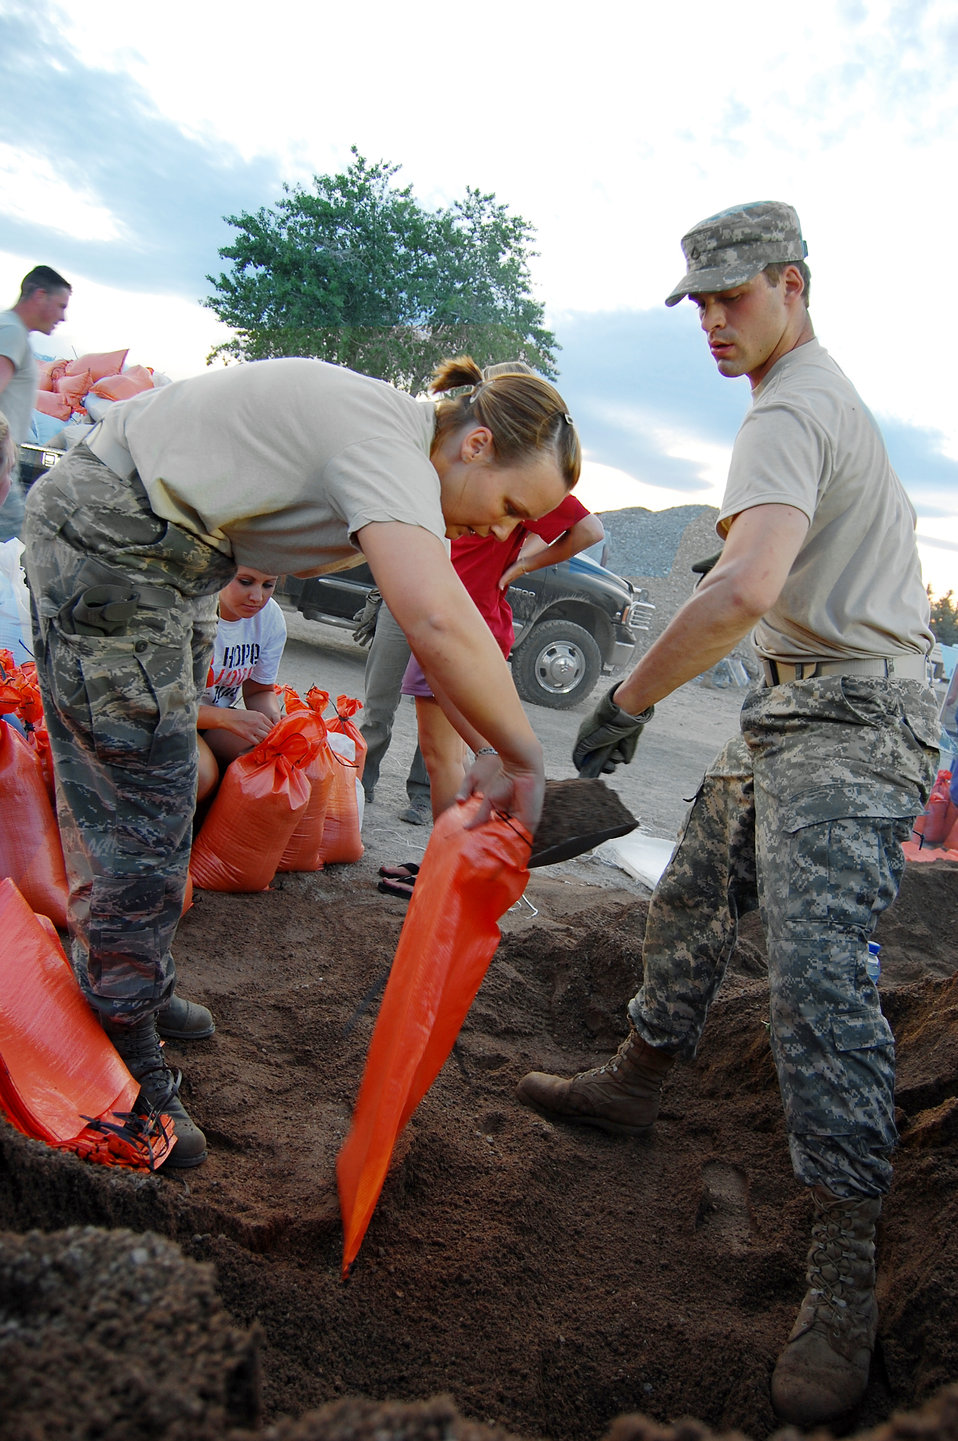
Guard members respond to flooding in three states

Staff Sgt. Niki Label and Pfc. Taylor Carlson fill sandbags to aid in stopping the rising flood waters of the Popo Agie River, June 11, 2010, in Fremont County, Wyo. Sergeant Label is assigned to the Wyoming Air National Guard's 187th Aeromedical Evacuation Squadron. Private Carlson is assigned to the Wyoming Army National Guard's A Battery, 2-300th Field Artillery.